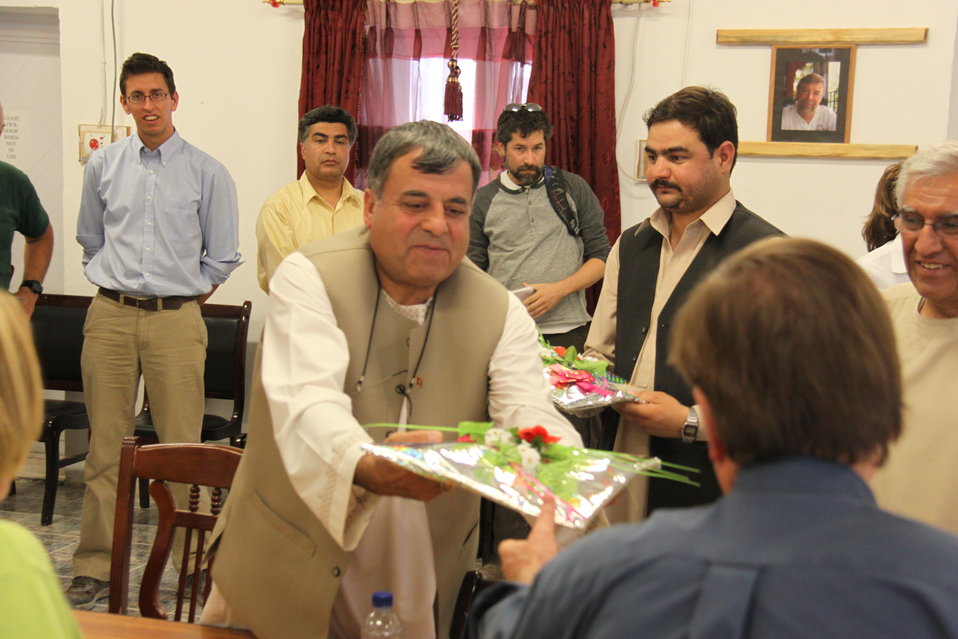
Meeting with Local Leaders in Kandahar